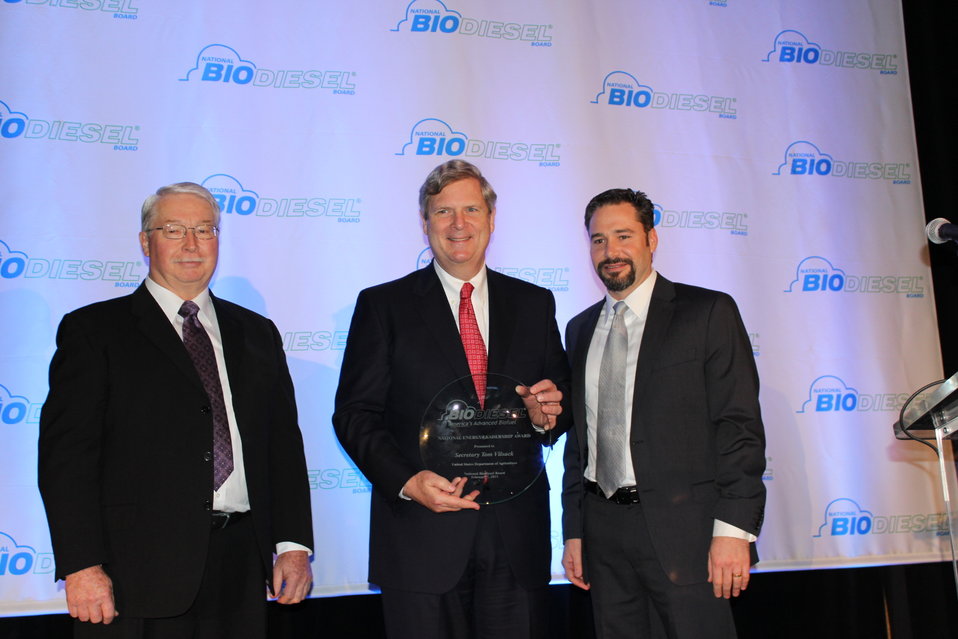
The National Biodiesel Board praised Secretary Vilsack as one of the strongest advocates for renewable fuels in the nation at the National Biodiesel Conference in Las Vegas, NV on Feb. 7, 2013 and presented him with the National Energy Leadership Award.